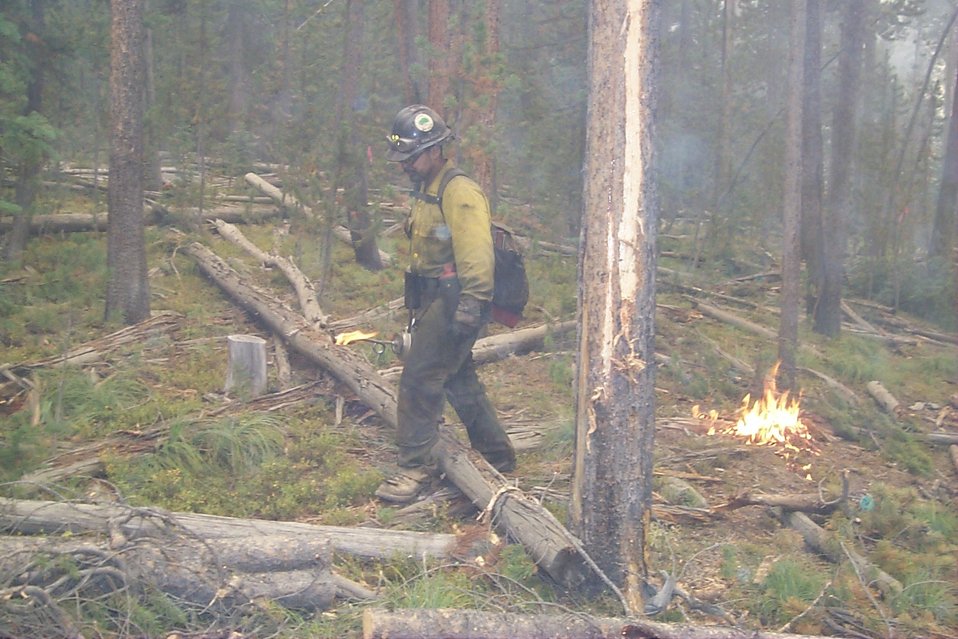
Controlled burn Fire Clearwater Fire Salmon Field Office USRD Upper Snake River District